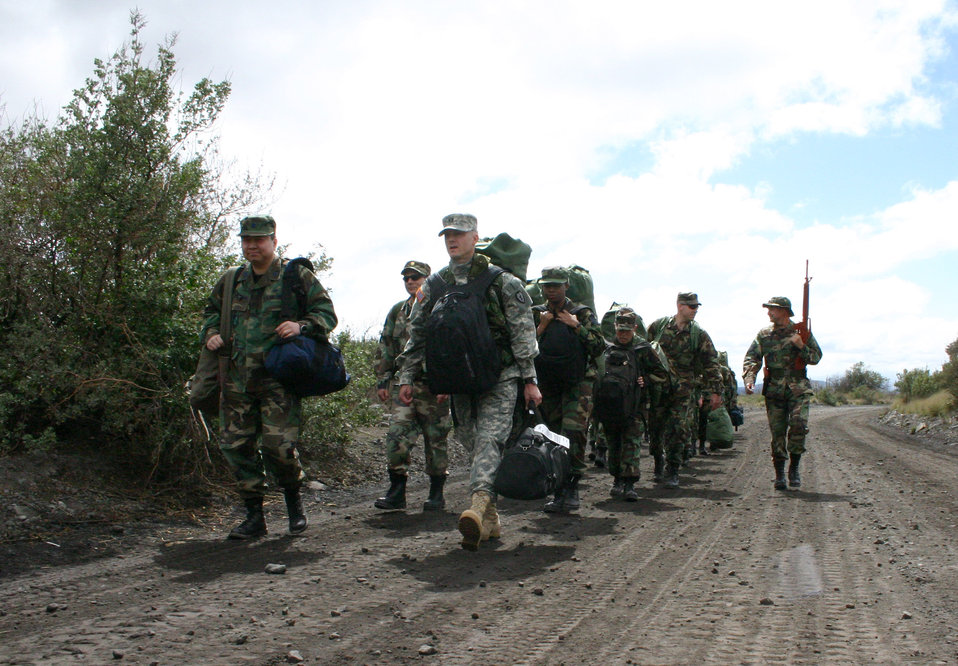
Pacific Joint Legal Exercise

Master Sgt. Daniel Kazumura (right) walks alongside participants in this year's Pacific Joint Legal Exercise on Sunday, March 5, 2006. The Pacific Air Forces exercise provides legal professionals with realistic deployment training. Nearly 30 U.S. active duty, Guard and Reserve legal professionals and one Canadian officer endure a week of austere conditions as well as classroom and scenario-driven lessons at the Pohakuloa Training Area, Hawaii. Sergeant Kazumura is the noncommissioned officer in charge of operations and readiness, Pacific Air Forces judge advocate office.